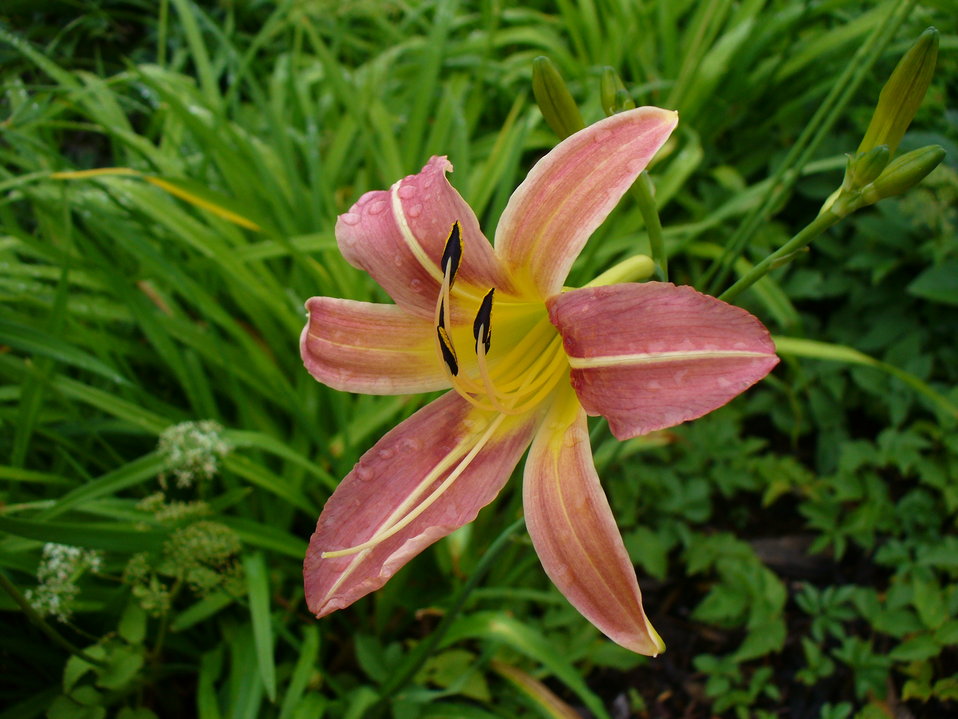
I am the originator of this photo. I hold the copyright. I release it to the public domain. This photo depicts a flower.